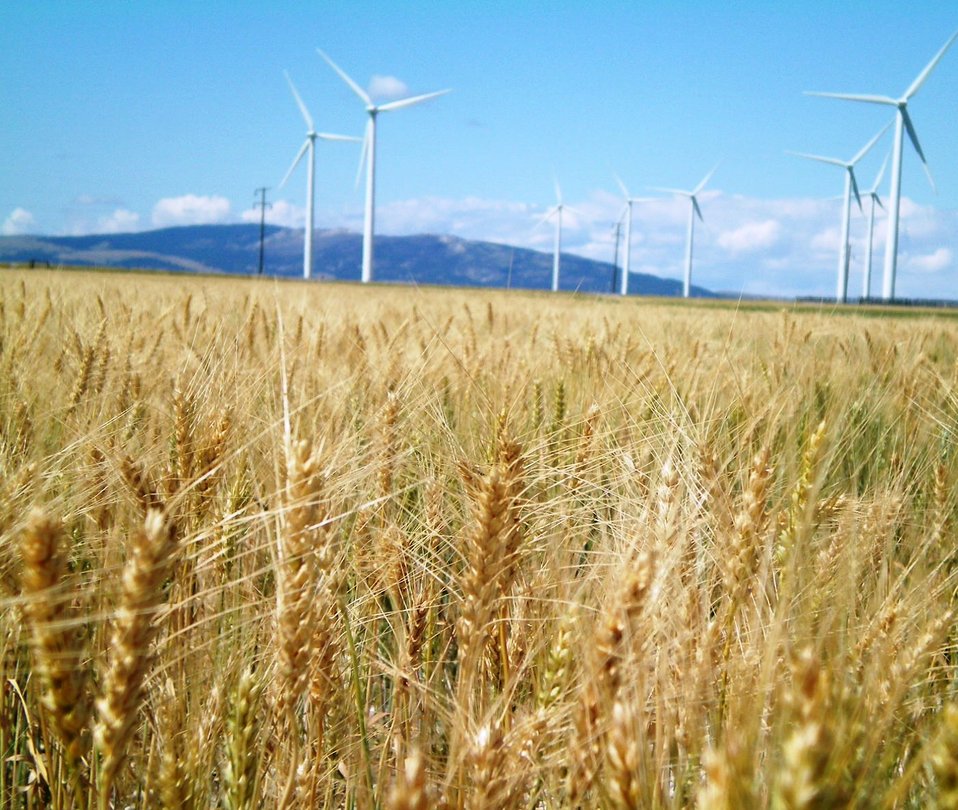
Shown is Judith Gap Wind Farm in Montana.
Wind turbines and agriculture successfully working together to grow grain on the ground and generate power in the air.